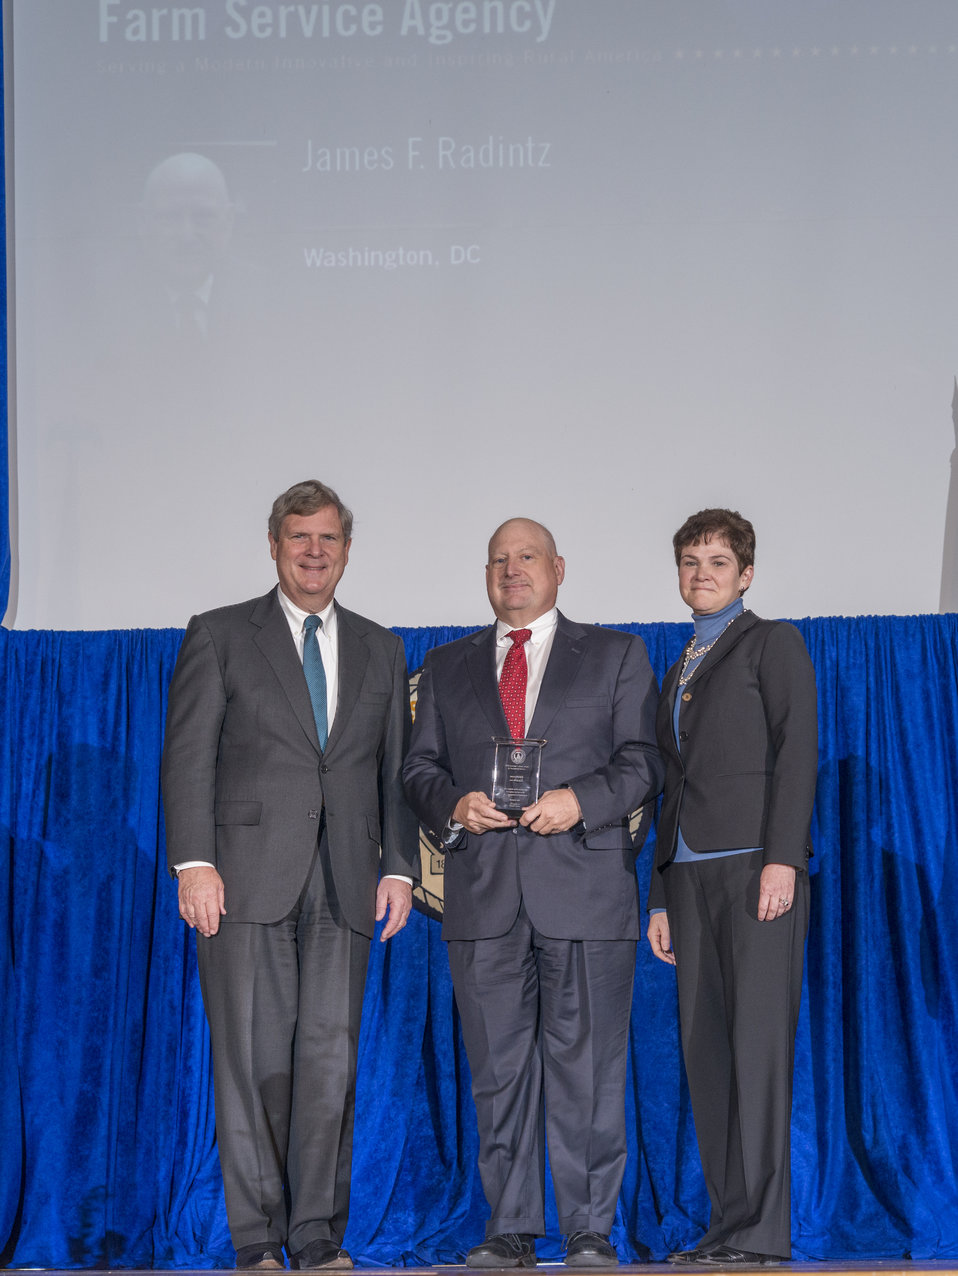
Agriculture Secretary Tom Vilsack and Agriculture Deputy Secretary Krysta Harden present the Secretary’s Honor Award to Farm Service Agency (FSA) employee James F. Radintz for his outstanding personal and professional excellence in improving the effectiveness of Farm Loan Programs that directly contributed to the accomplishment of the U.S. Department of Agriculture’s (USDA) goals and objectives at the 2013 Secretary's Honor Awards in the Jefferson Auditorium at USDA in Washington, D.C. on Wednesday, Dec.11, 2013.